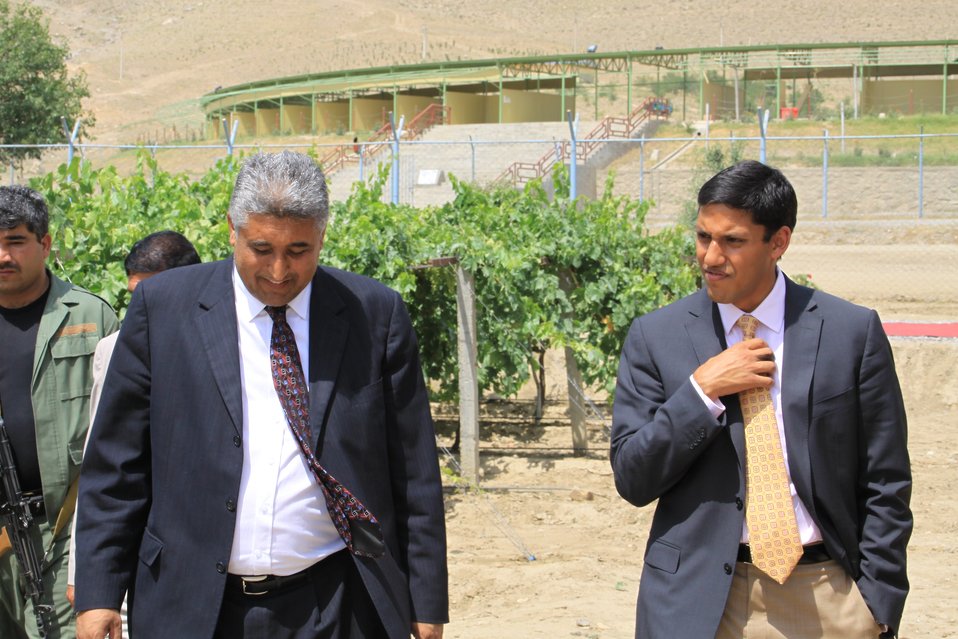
Badam Bagh Farm